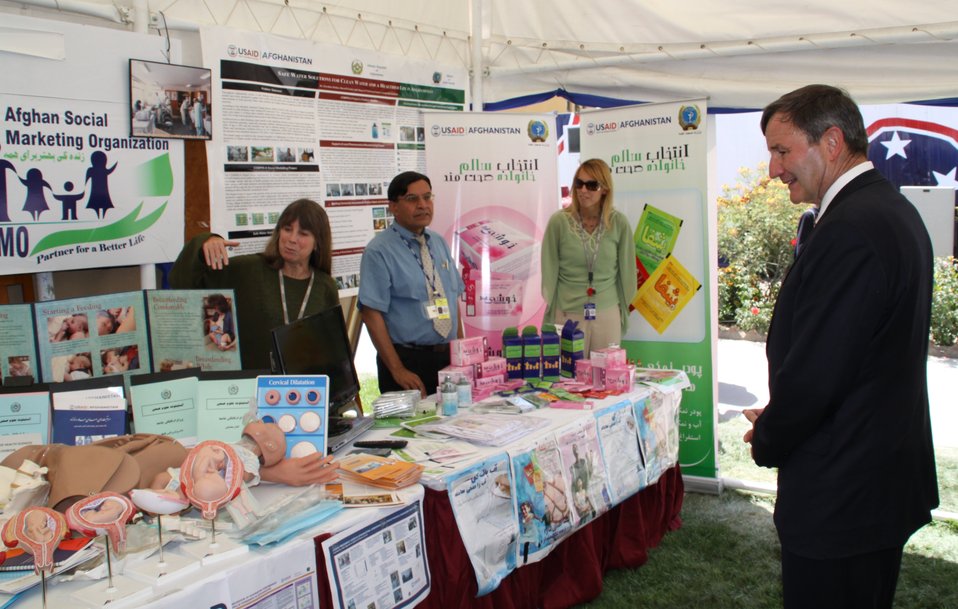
Kabul Official July 4th Celebration